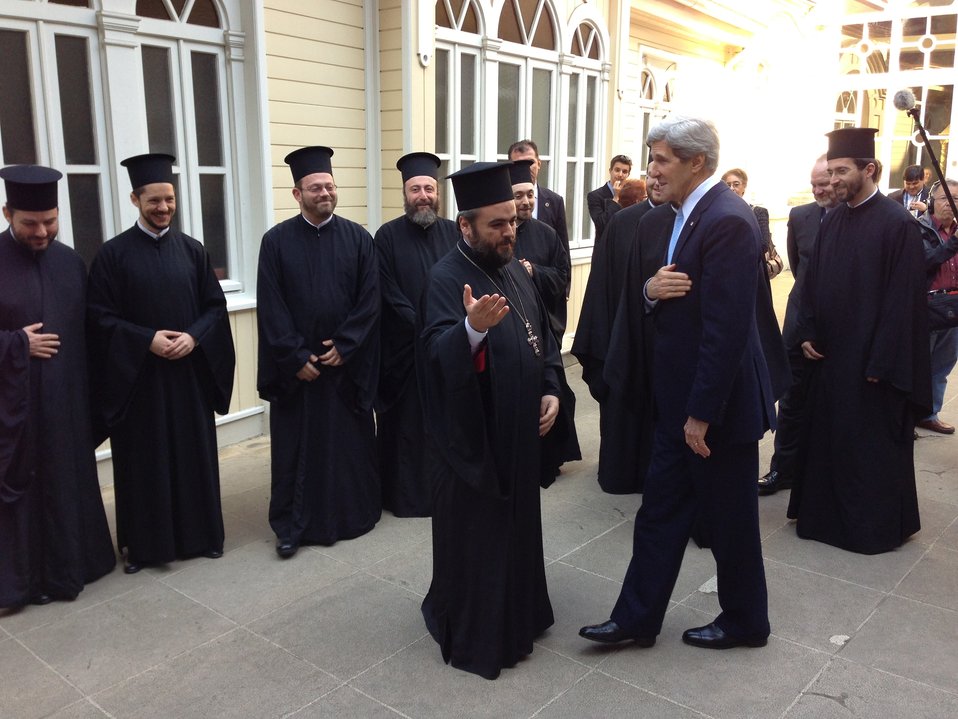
Secretary Kerry Greets Clergy of the Court of the Ecumenical Patriarchate

U.S. Secretary of State John Kerry greets clergy of the court of the Ecumenical Patriarchate in Istanbul, Turkey on April 21, 2013.